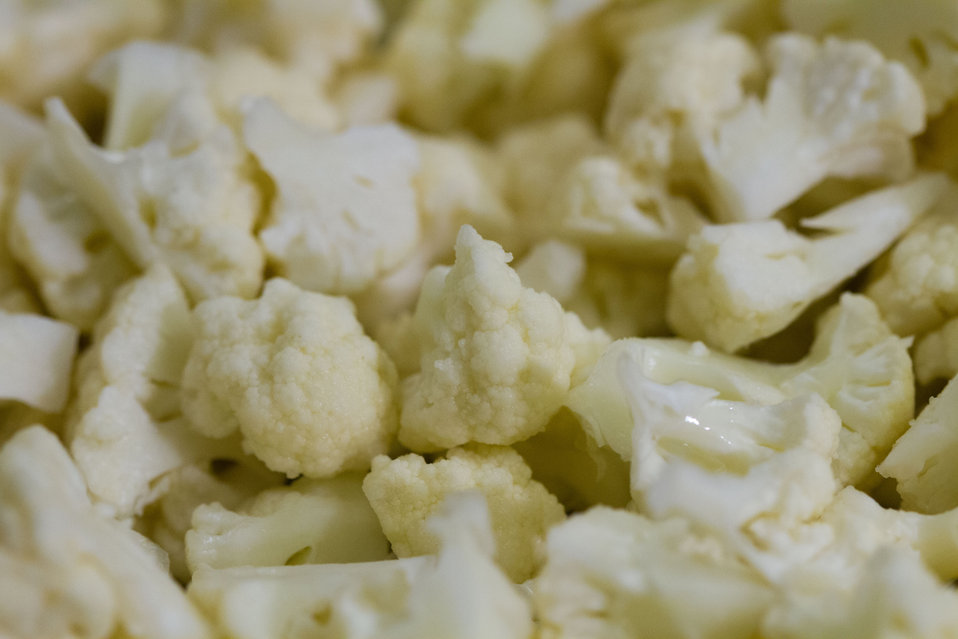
Washed cauliflower sit ready to be mixed for sunny broccoli and cauliflower toss are portioned for more than 50 students from the 5th grade classes at Yorkshire Elementary School in Manassas, VA., participated in a taste testing of the new school lunch menu created to meet the new standards. Students tested a sample menu of black-bean filled pizza, pineapple spear, plantain, sunny broccoli and cauliflower toss, and an apple and celery cup with sunbutter dip (a peanut butter substitution), on Wednesday, September 5, 2012.